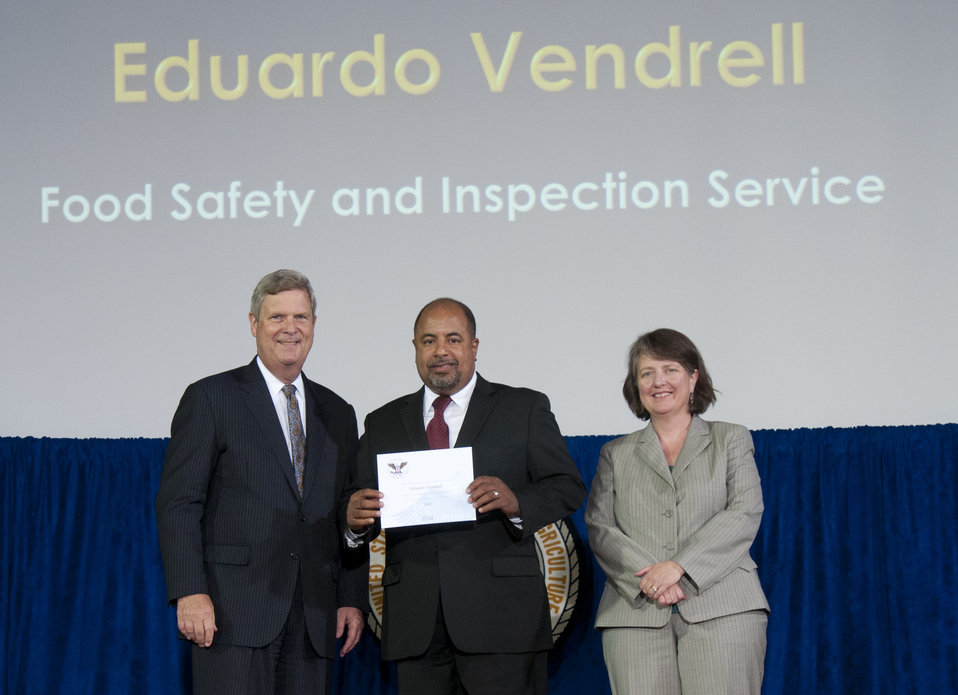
Agriculture Secretary Tom Vilsack and Agriculture Deputy Secretary Kathleen Merrigan present the President’s Call to Service Award to Food Safety and Inspection Service (FSIS) employee Eduardo Vendrell at the U.S. Department of Agriculture (USDA) 64th Annual Honor Awards Ceremony in Washington, D.C. on Wednesday, Sept. 12, 2012. The Silver Presidential Volunteer Service Award is presented to the employee who has served a minimum of 250 hours and a maximum of 499 hours of service.